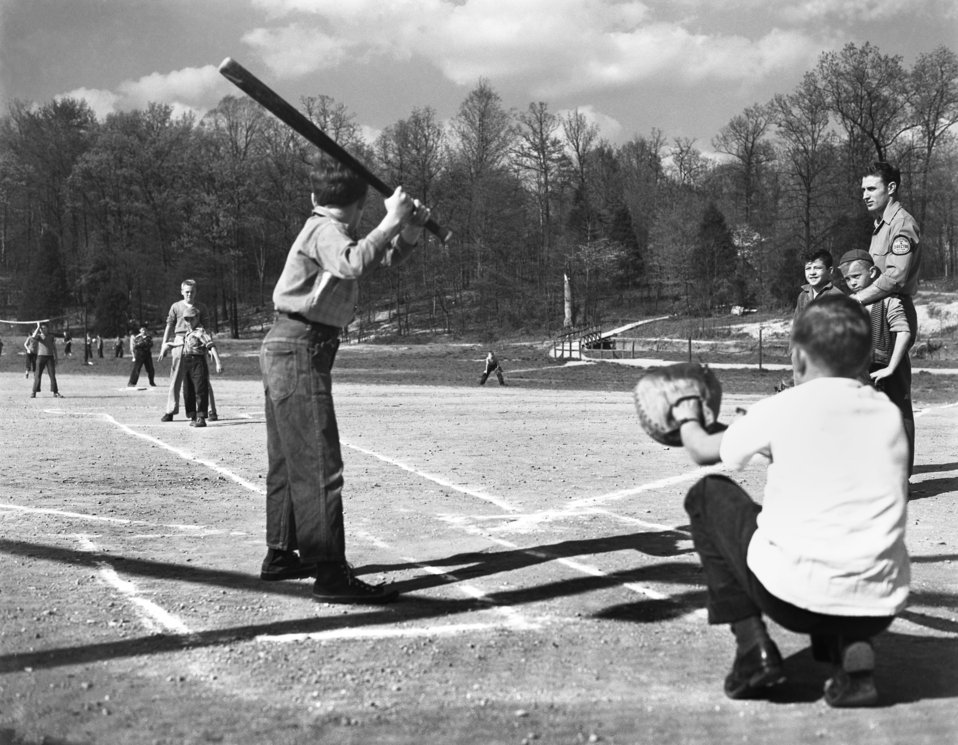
Baseball Game on Play Ground for Recreation Welfare Oak Ridge 1947

3414-12a DOE photo Ed Westcott 4-17-1947 Oak Ridge Tennessee